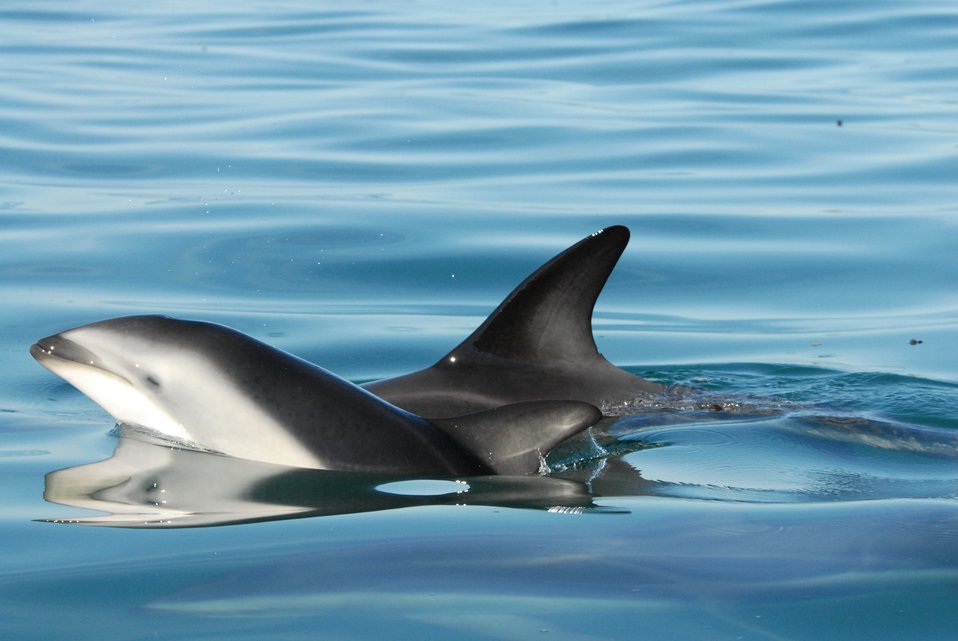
Dusky dolphin (Lagenorhynchus obscurus)